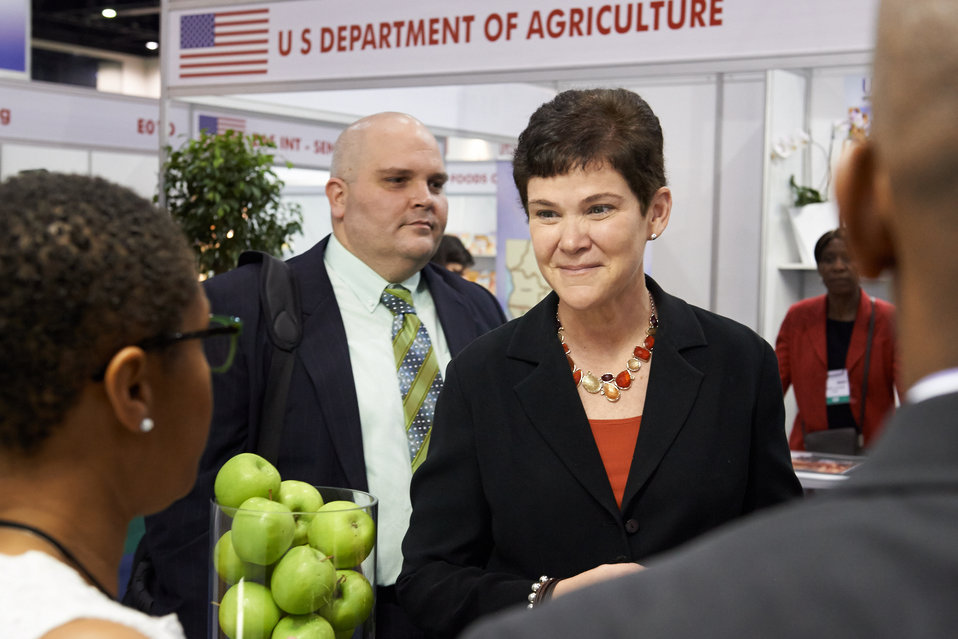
Agriculture Deputy Secretary Krysta Harden walks through exhibits on a trade mission in Johannesburg, South Africa on Wednesday, Sep. 18, 2013. Agriculture Deputy Secretary Krysta Harden led a trade mission to the Sub-Saharan Africa Business Round Table to promote U. S. agricultural trade and investment in the region, which is a long-term goal of the initiative. The trade mission includes 17 U.S. companies and 15 agricultural trade associations that represent a variety of products such as snack foods, beverages, fruit, nuts, and more.